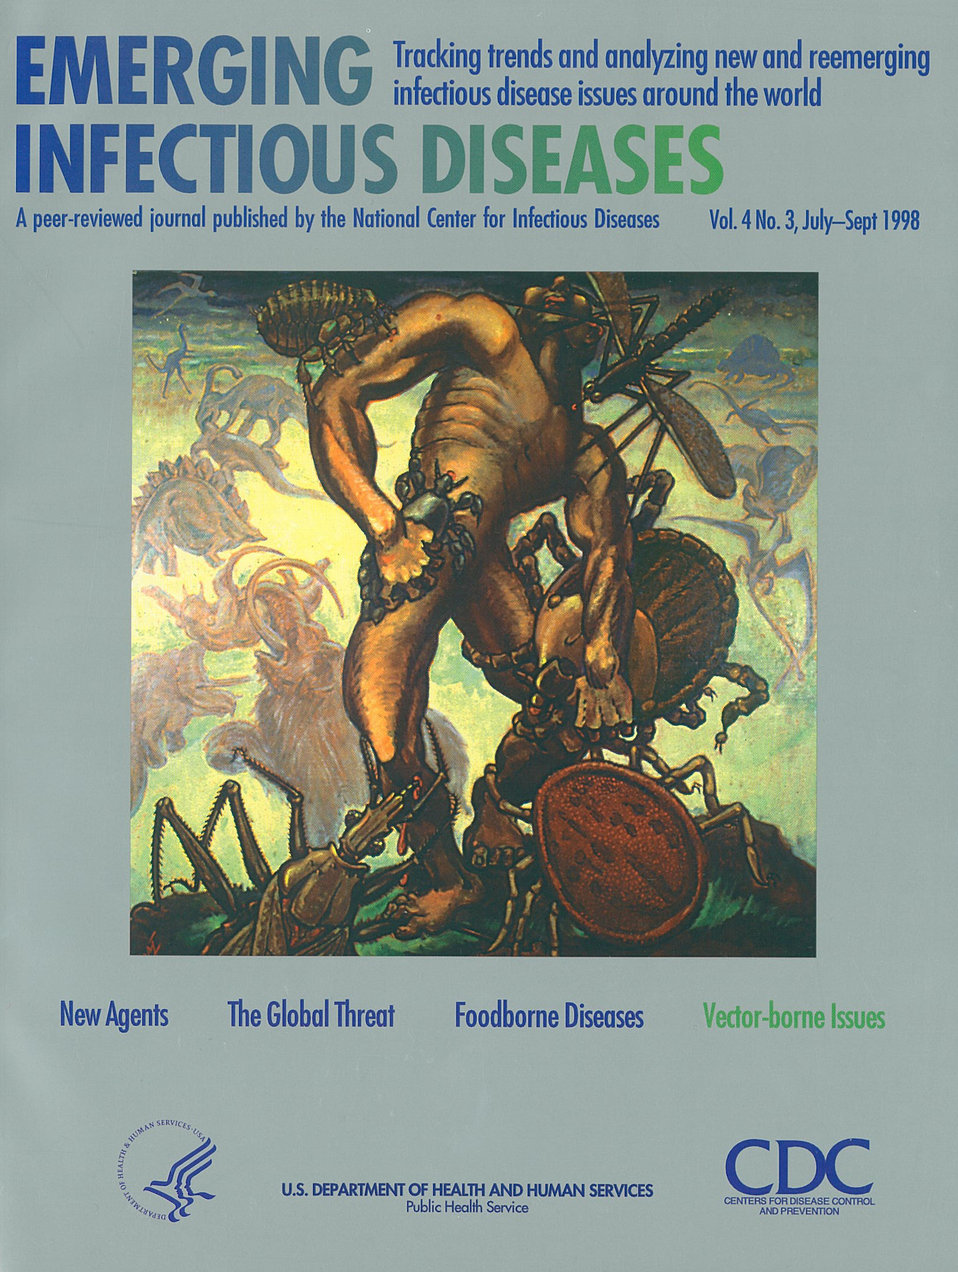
Emerging Infectious Diseases (EID) cover artwork for Volume 4, Number 3, July-September 1998 issue.